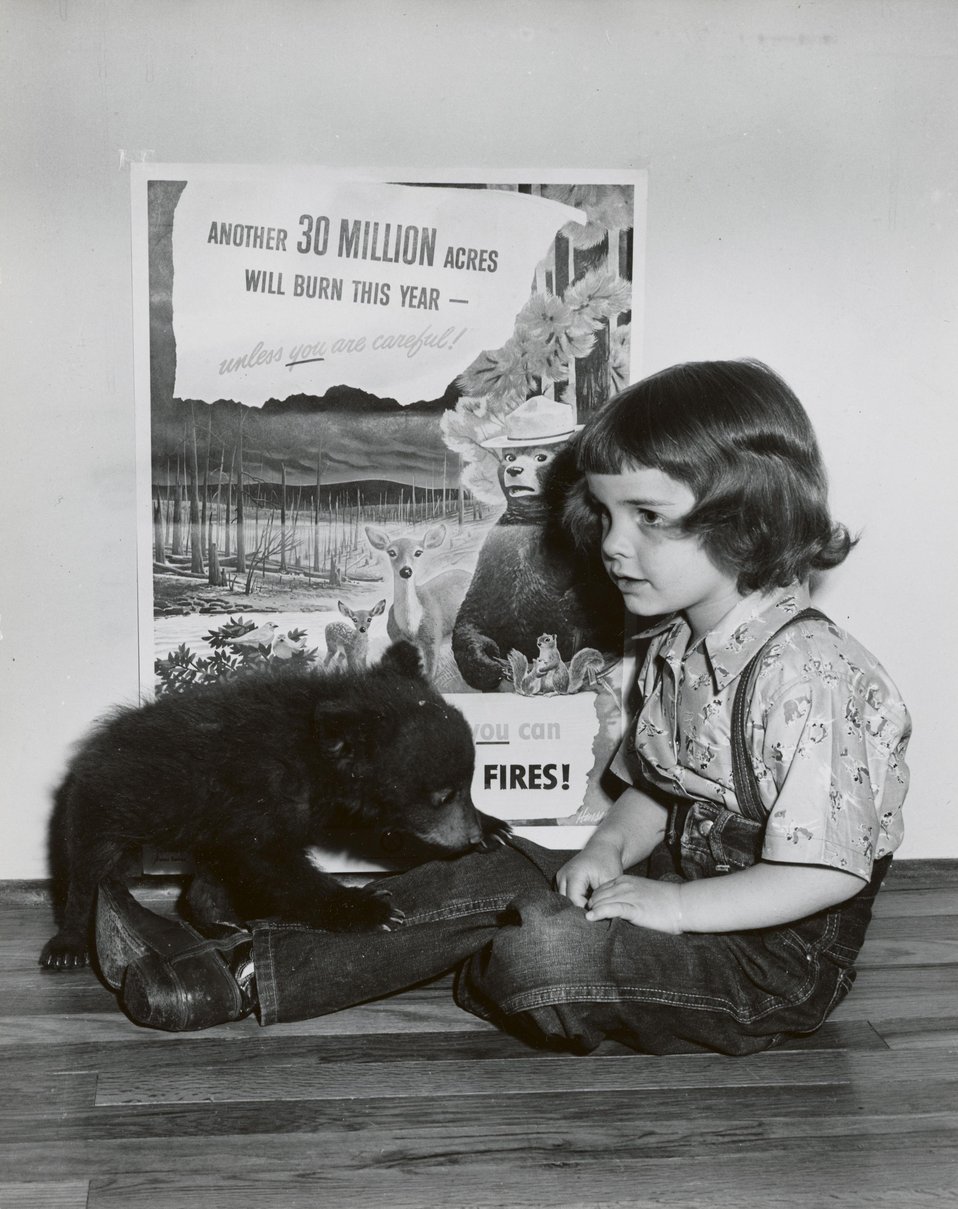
Judy Bell and Smokey Bear sit together shortly after Smokey had been rescued from a forest fire in the Capitan Mountains of New Mexico in May 1950.